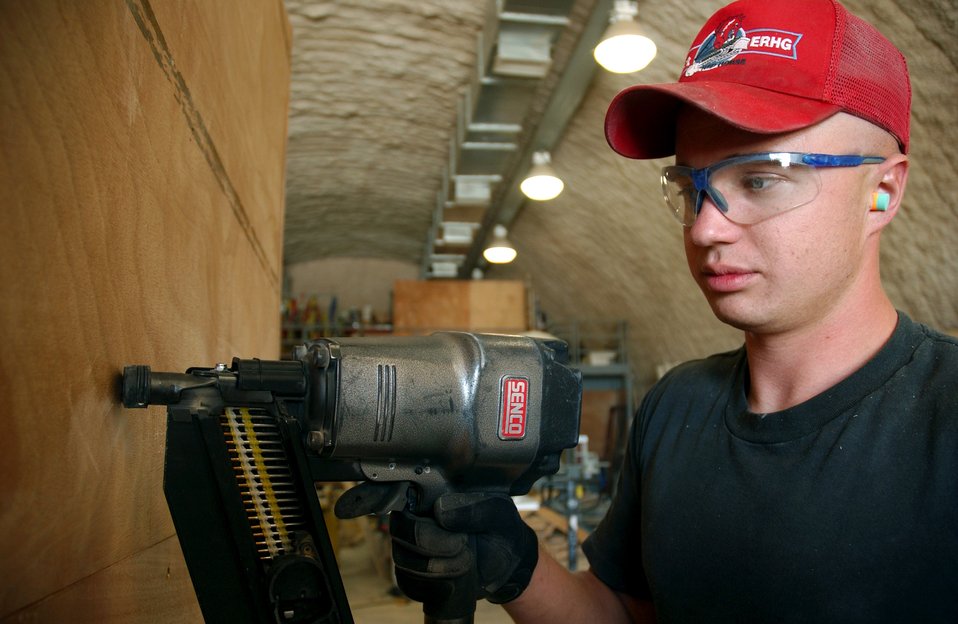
Building crates

Staff Sgt. Benjamin Jensen builds baggage crates at the passenger terminal at a deployed location in southwest Asia, March 8, 2006. The crates are used to transport the baggage of forward deploying servicemembers. Sergeant Jensen is assigned to the 379th Expeditionary Civil Engineer Squadron. He is deployed from Mountain Home Air Force Base, Idaho.